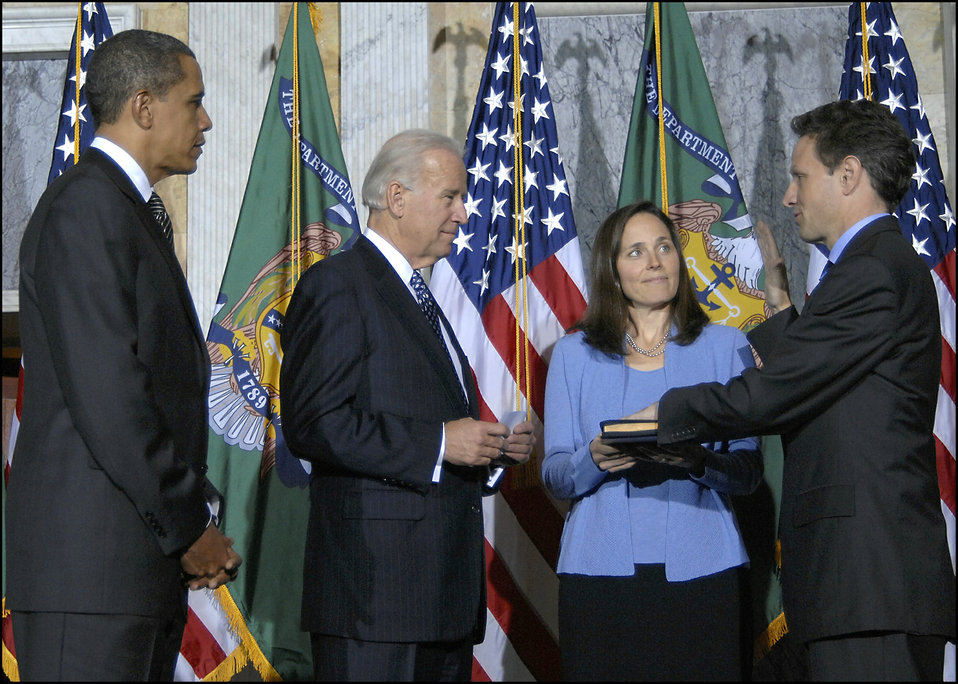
Secretary Geithner being sworn-in

Vice President Joe Biden swearing in Secretary Geithner as United States Secretary of the Treasury on January 26, 2009 in the Cash Room. President Barack Obama and Carole Sonnenfeld Geithner look on.